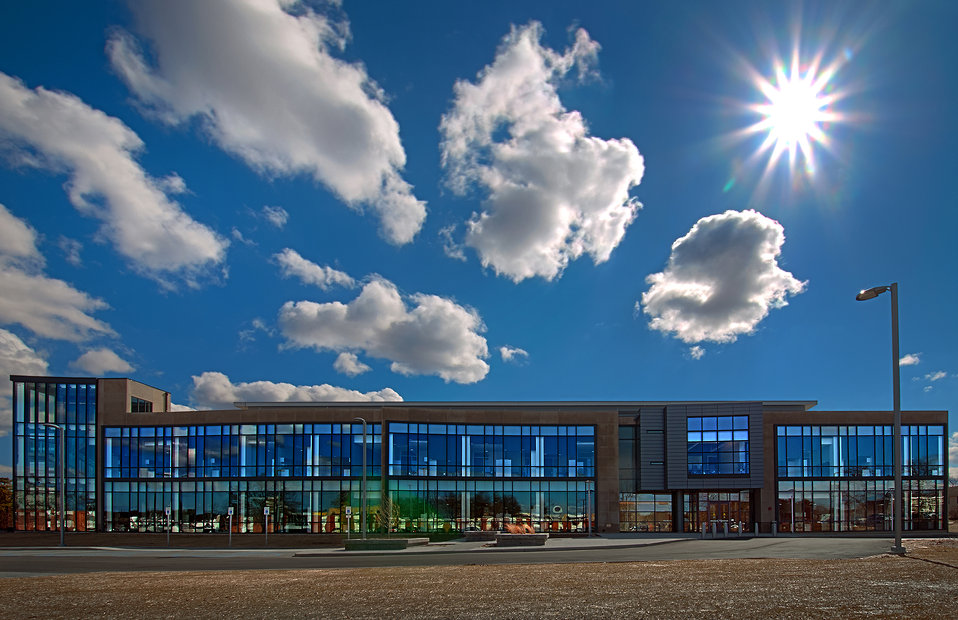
Brookhaven National Laboratory's Interdisciplinary Science Building will provided modern, 21st century, high-accuracy laboratories, office and support functions.
The building will group existing energy research scientists into one facility with collaborative environments to facilitate and realize the scientific benefits of multi-disciplinary collaboration. Work in the Interdisciplinary Science Building will focus on energy-related R&D enabling breakthroughs in the effective uses of renewable energy through improved conversion, transmission and storage.